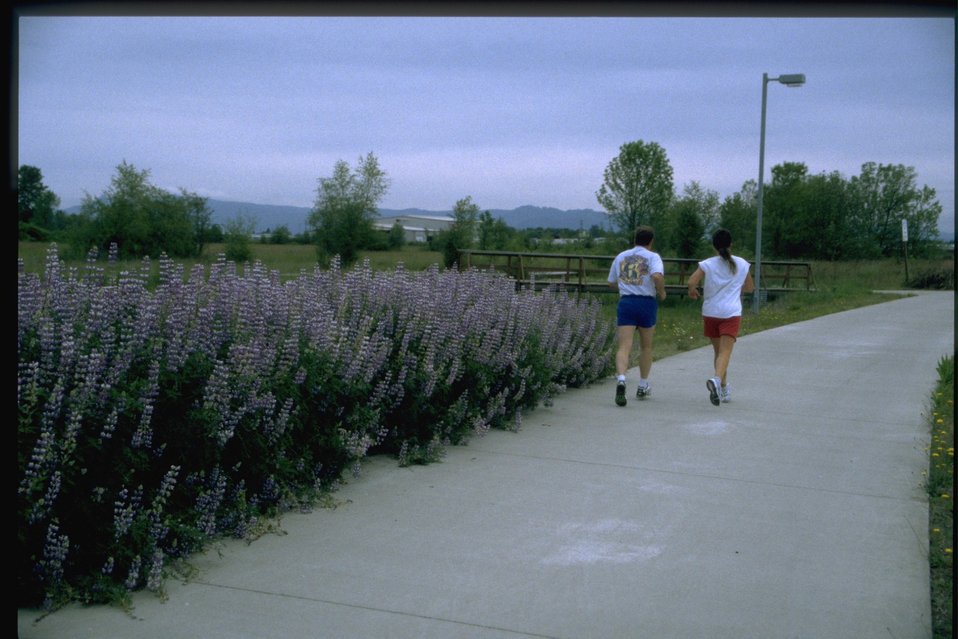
Two joggers running past lupine wildflowers.